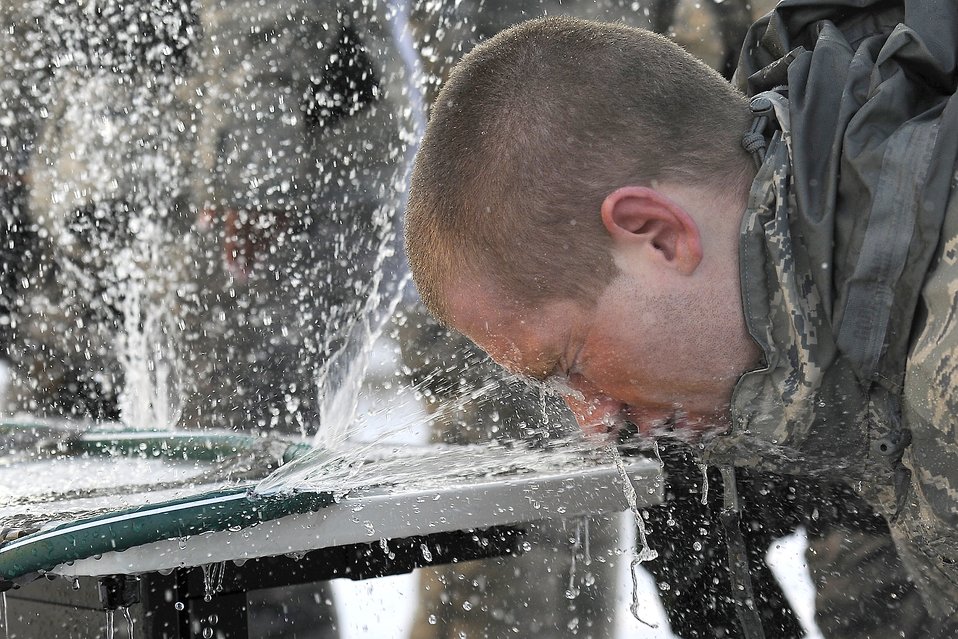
Need water now!

Airman 1st Class Thomas Hearton washes Oleoresin Capsicum spray from his face Jan. 5, 2011, at Hill Air Force Base, Utah. The spray is used to temporarily incapacitate individuals, and all security forces Airmen receive this training on arrival at their squadron. Airman Hearton is assigned to the 75th Security Forces Squadron.